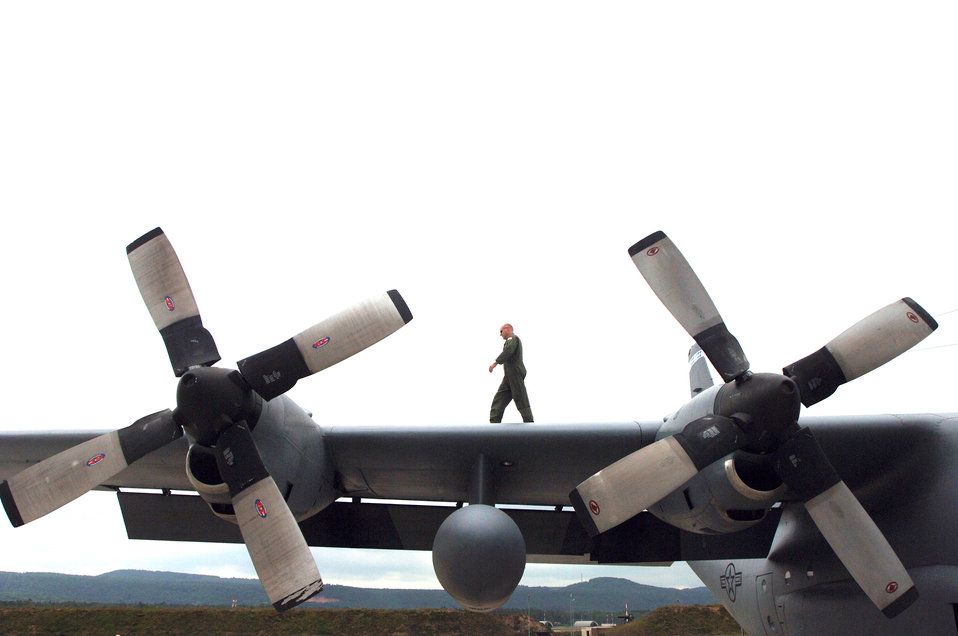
C-130 mission in Germany

Tech. Sgt. Jeff McCombs walks the wing of a C-130 Hercules at Ramstein Air Base, Germany, on Monday, June 5, 2006. Sergeant McCombs is an aircraft engineer with the 37th Airlift Squadron.